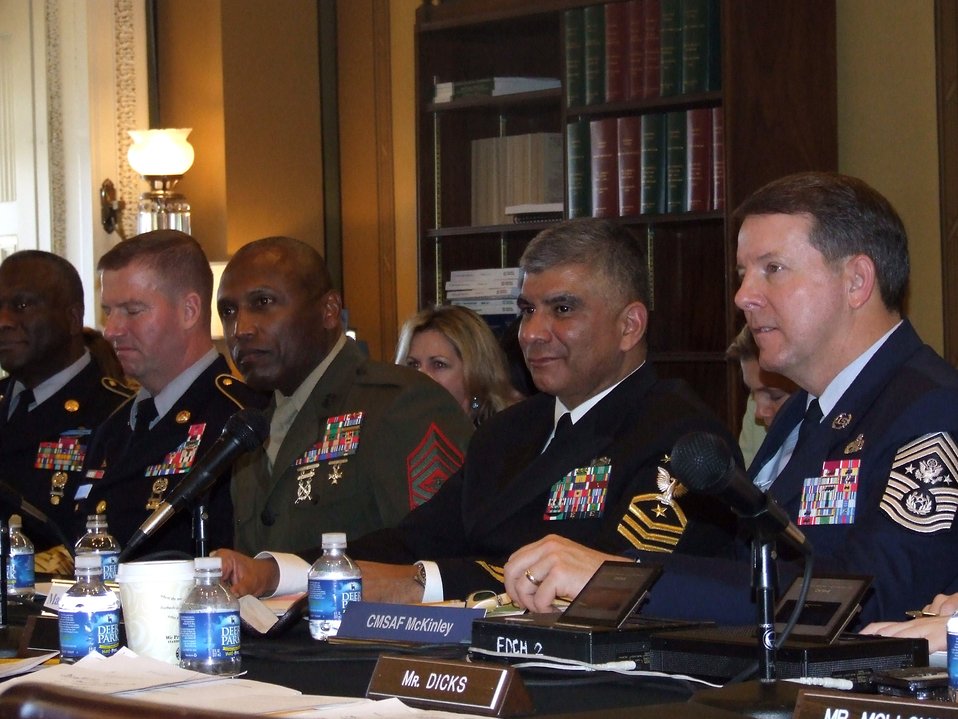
Chief McKinley testifies before Congress

Chief Master Sgt. of the Air Force Rodney J. McKinley, far right, testifies with other Armed Forces senior enlisted leaders before the House Appropriations Committee, Military Quality of Life and Veterans' Affairs Subcommittee Feb. 9 in Washington, D.C. As the Air Force's senior enlisted leader, Chief McKinley addressed quality of life, global combat and Air Force readiness issues with the subcommittee.